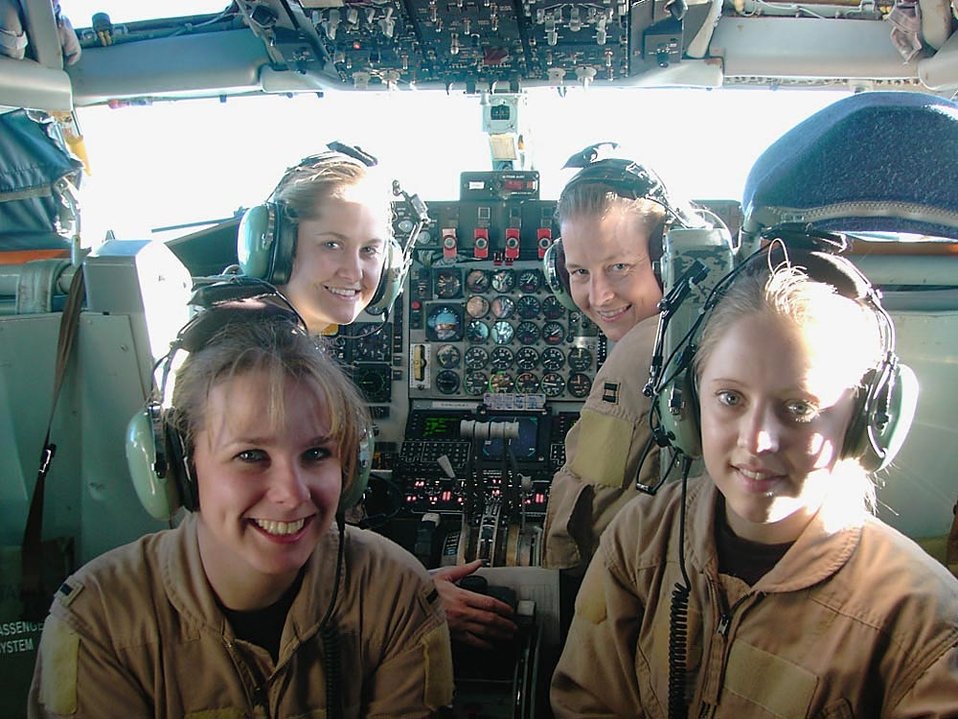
Ladies night over Afghanistan

OPERATION ENDURING FREEDOM -- (Clockwise from lower left) 1st Lt. Alison, Capts. Heather and Waynetta and, Senior Airman Lyndi, all from the 376th Expeditionary Air Refueling Squadron, flew an all-female KC-135 Stratotanker air refueling mission over Afghanistan on Jan. 31.